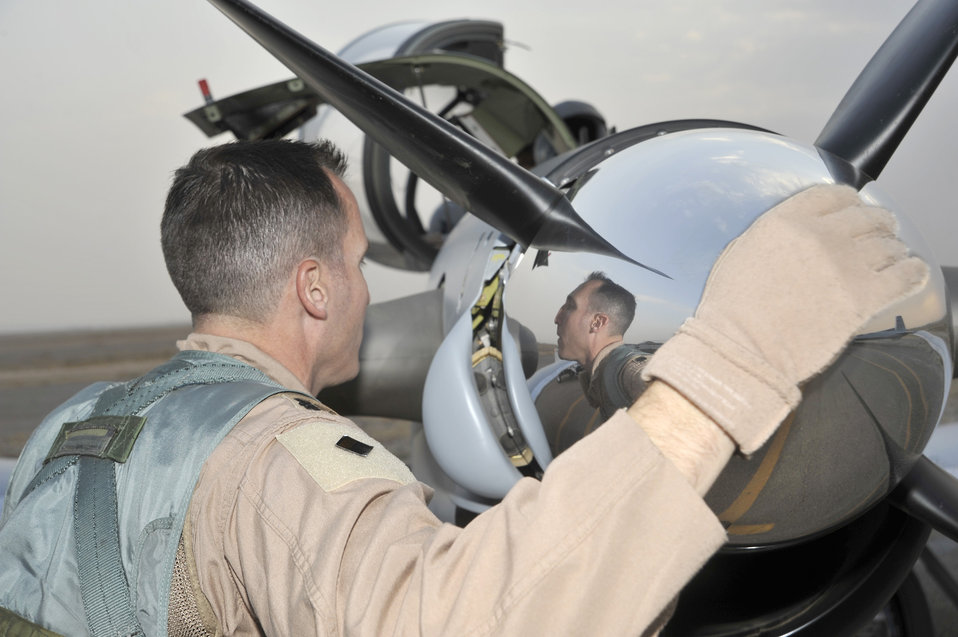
Iraqi air force pilots train with T-6A

Lt. Col. Charles Stevens performs a pre-flight inspection before a training flight with an Iraqi air force student pilot Sept. 26, 2010, at Tikrit Air Base, Iraq. Air Force instructor pilots are training and advising the first group of Iraqi air force instructor pilots on the T-6A Texan II as part of the Operation New Dawn mission. Colonel Stevens is the 52nd Expeditionary Flying Training Squadron commander.